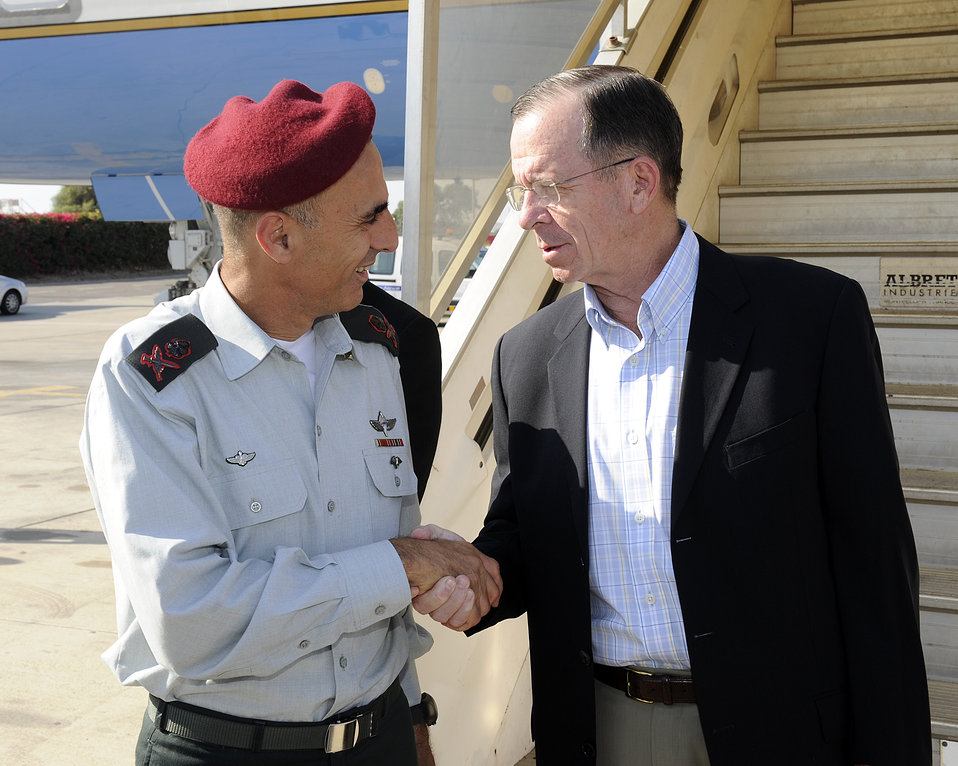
Admiral Mullen Is Welcomed to Israel By General Shamnii

Chairman of the Joint Chiefs of Staff of the United States Military, Admiral Michael G. Mullen, is welcomed to Israel by General Gadi Shamnii on July 18, 2011.